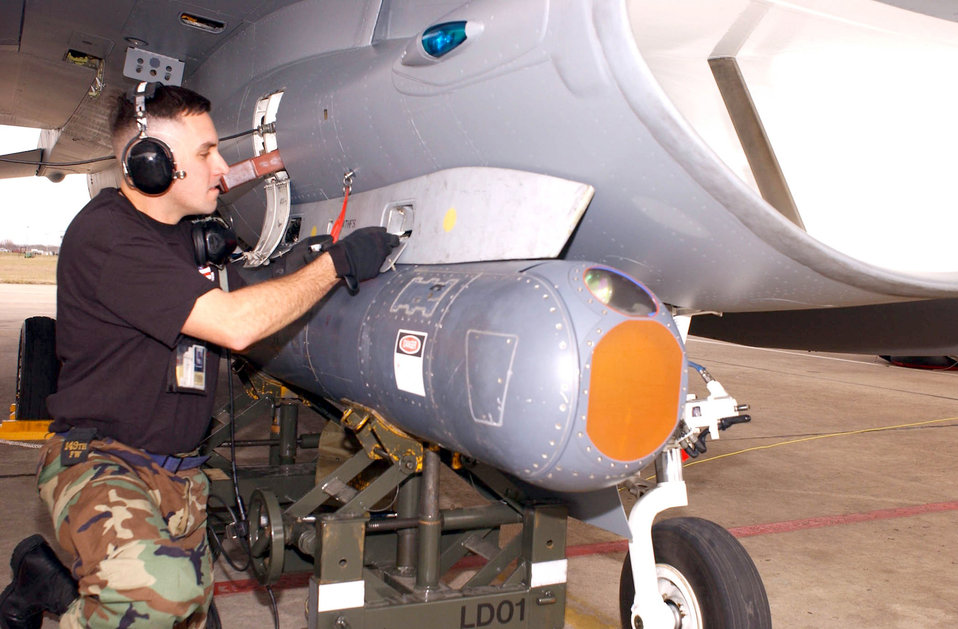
Right on target

LACKLAND AIR FORCE BASE, Texas -- Tech. Sgt. Marcos Farias attaches a Low-Altitude Navigation and Targeting Infrared for Night targeting pod to a 149th Fighter Wing F-16 Fighting Falcon here. The 149th FW will be the first unit in the Air Force to graduate pilots from the F-16 basic course with targeting-pod training.